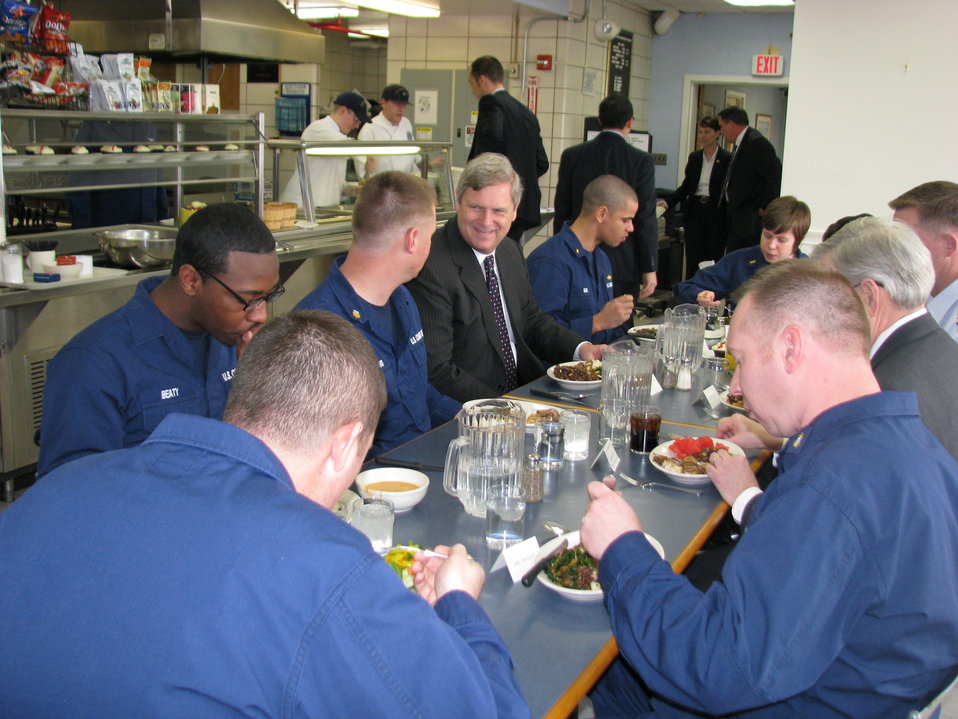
Agriculture Secretary Tom Vilsack shares a meal with crew of the buoytender USCG Marcus Hanna at the U.S. Coast Guard Station in South Portland, ME on Thursday, Mar. 14, 2013. Secretary Vilsack highlighted the importance of nutrition to America’s military readiness. Today, only a quarter of Americans aged 17 to 24 are eligible to serve in the armed forces – in part because many are overweight or obese.